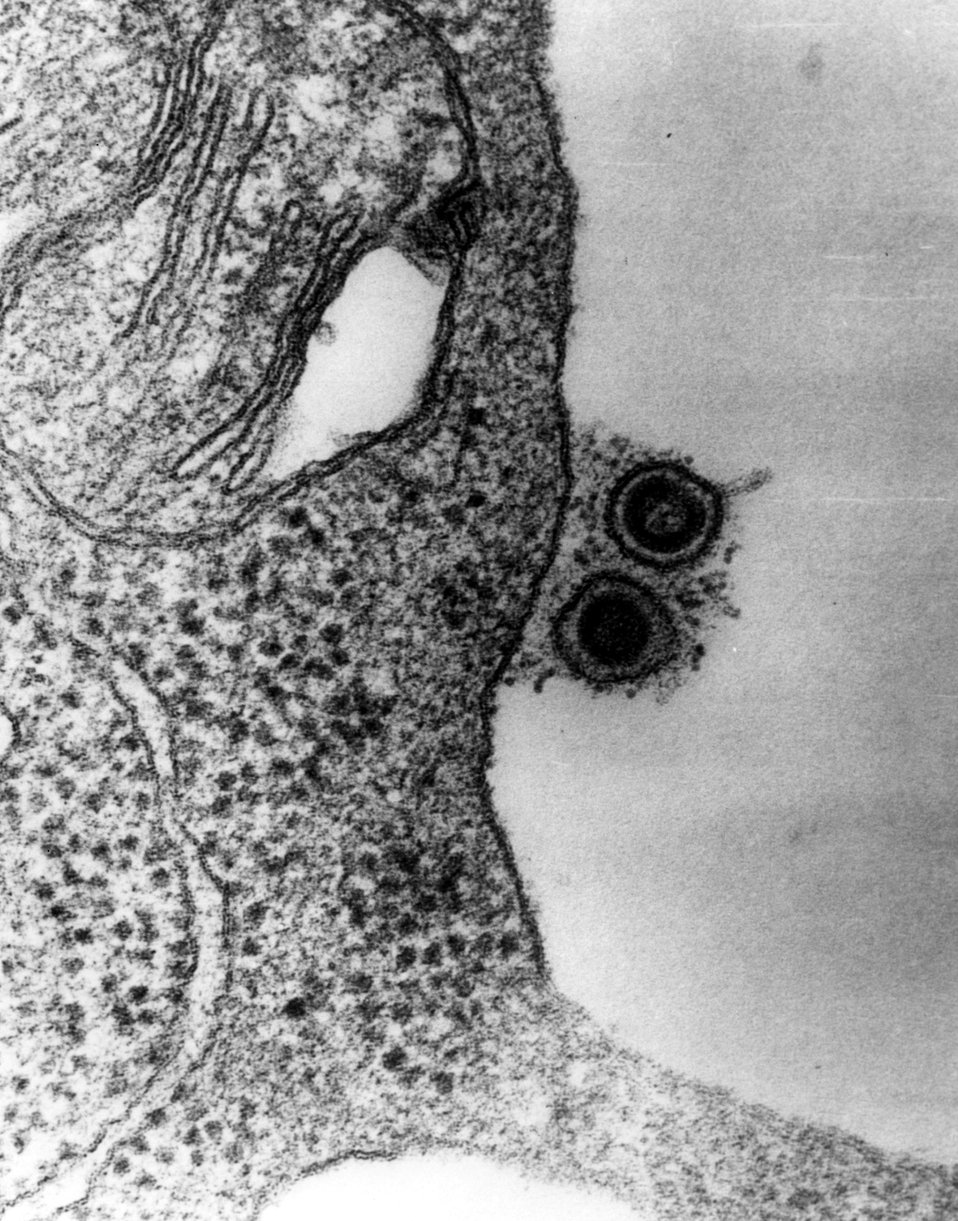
VIRUS STUDIES...The role of viruses as possible initiators of certain types of cancers is under study at the U.S. Atomic Energy Commission's Oak Ridge National Laboratory's Biology Division. c. 1974